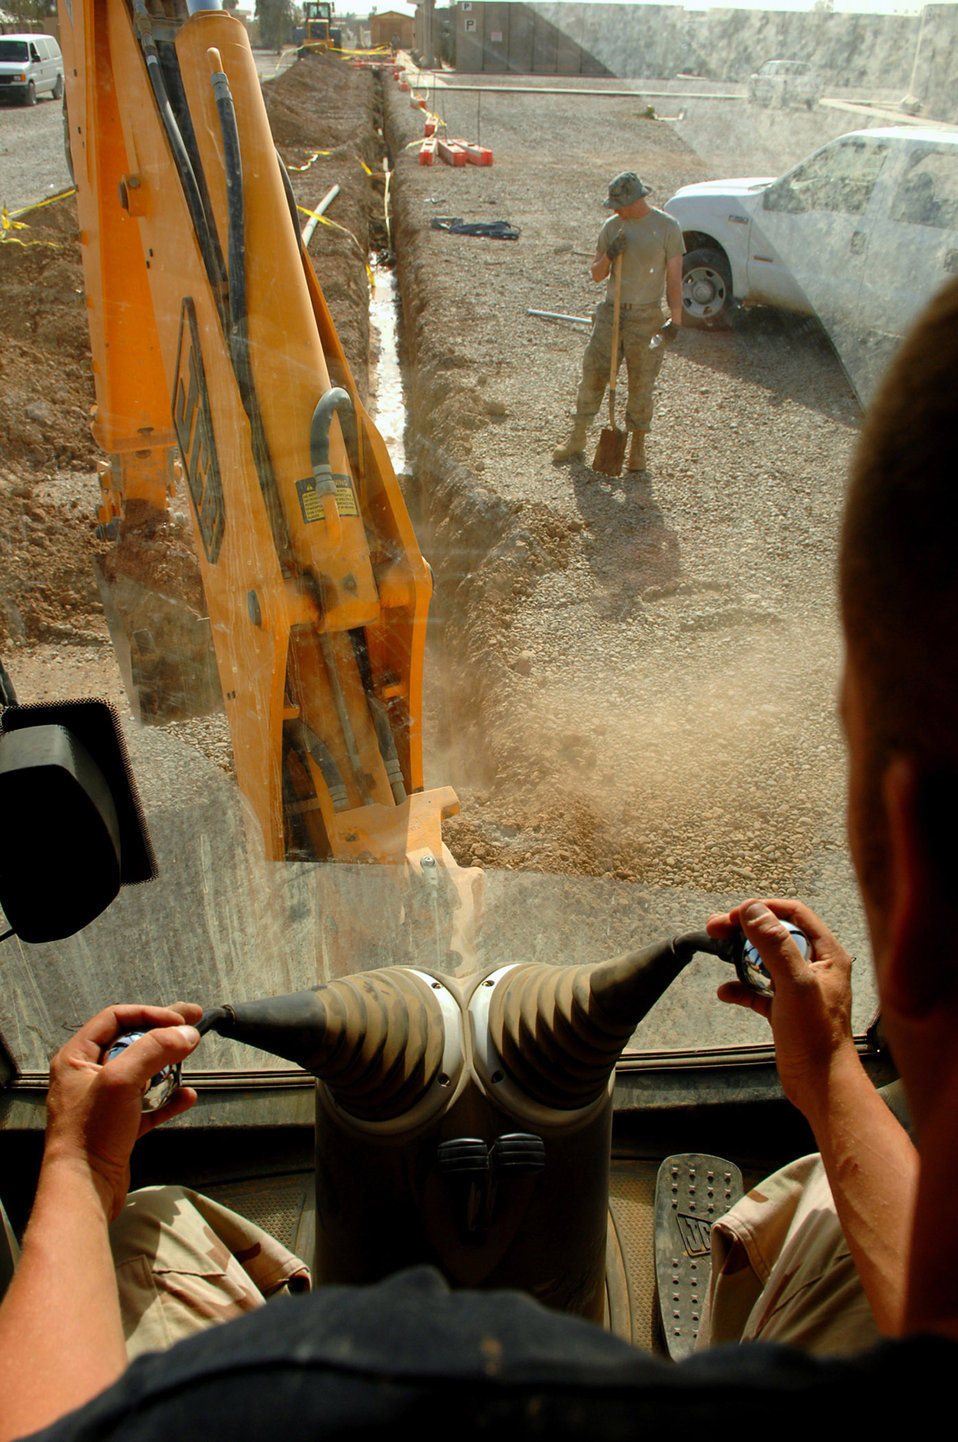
Water engineering

Staff Sgt. John Hampsey excavates dirt from a water main site in the Air Force housing area March 25 at Balad Air Base, Iraq. The 332nd Civil Engineer Squadron utilities shop Airmen are in the process of replacing old pipes and installing newer and thicker pipes that will bring the base to the next echelon of stability. Sergeant Hampsey is a 332nd CES plumber deployed form Luke Air Force Base, Ariz.